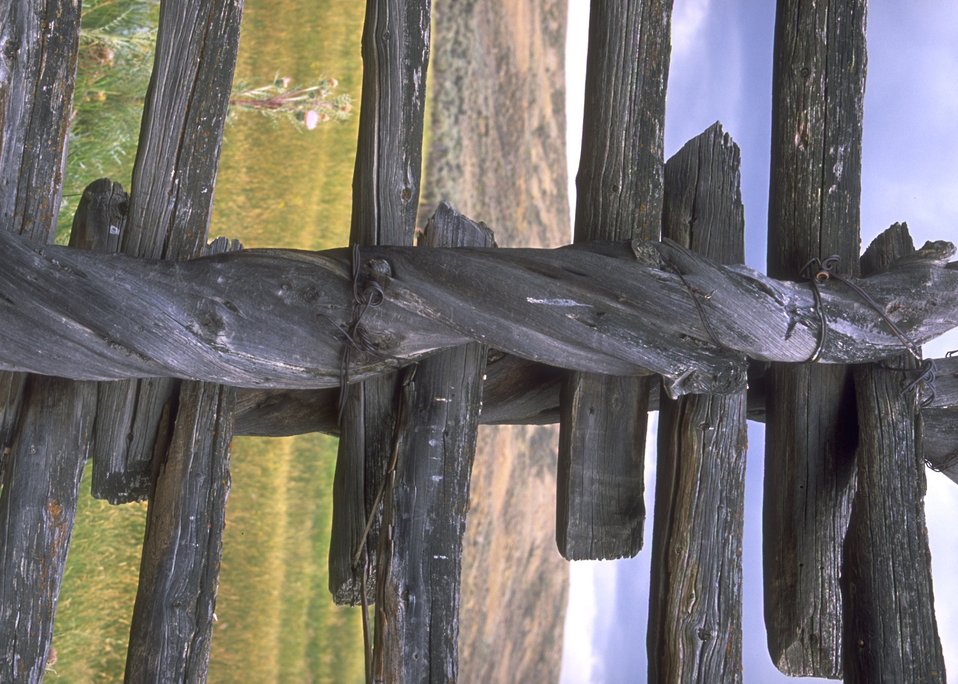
Historic Crookston Ranch near OHV Sand Dunes Area, Rock Springs Field Office